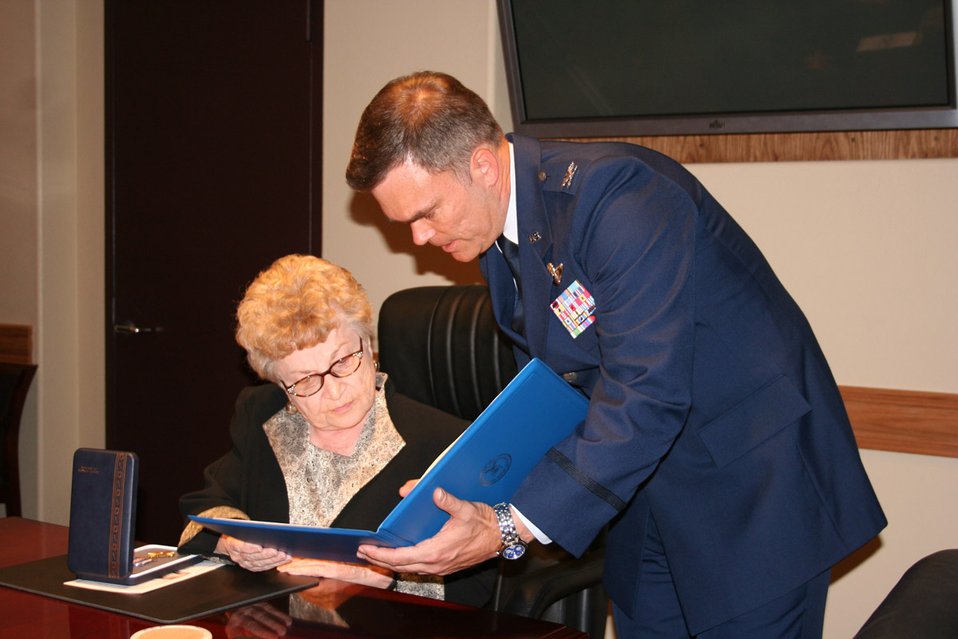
Cold War veteran receives Distinguished Flying Cross

Col. T. Harrison Smith presents Loy Lindsay with her husband's Distinguished Flying Cross. Colonel Smith presided over the ceremony that awarded the DFC to Tech. Sgt. Roscoe Lindsay posthumously 54 years after he flew a classified reconnaissance mission over the Soviet Union in 1952. Colonel Smith is the 22nd Air Refueling Wing vice commander.